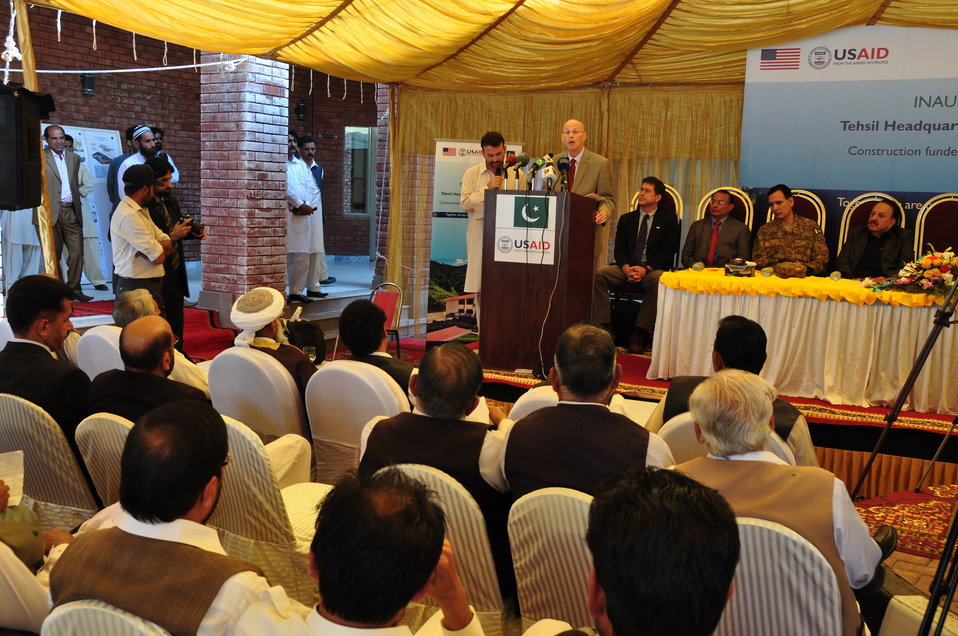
Dhirkot Reconstructed Hospital Inauguration Pakistan Reconstruction Program 06